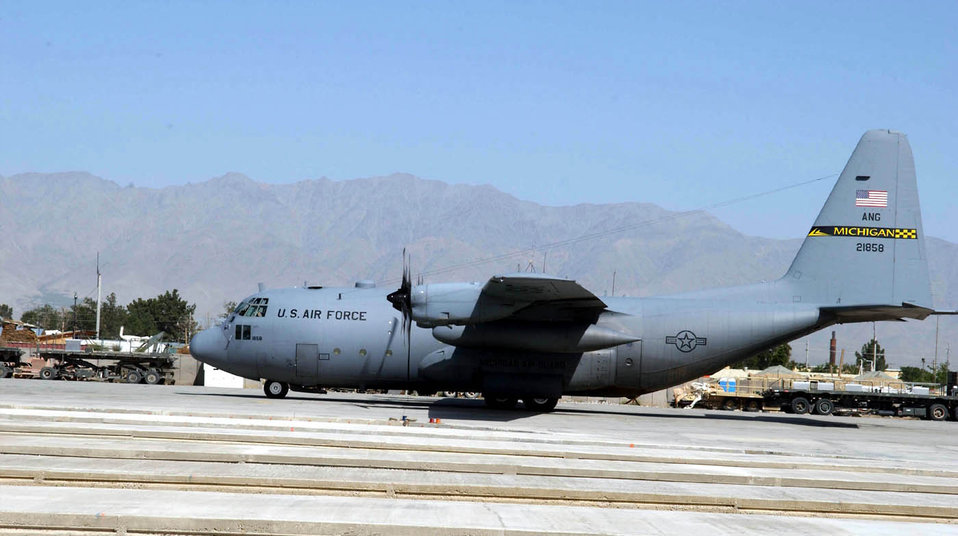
'Cementing' friendships

BAGRAM AIR BASE, Afghanistan -- An American-South Korean engineering project will make it easier for larger-frame aircraft, like this C-130 Hercules from the Michigan Air National Guard, to maneuver in and out of here.